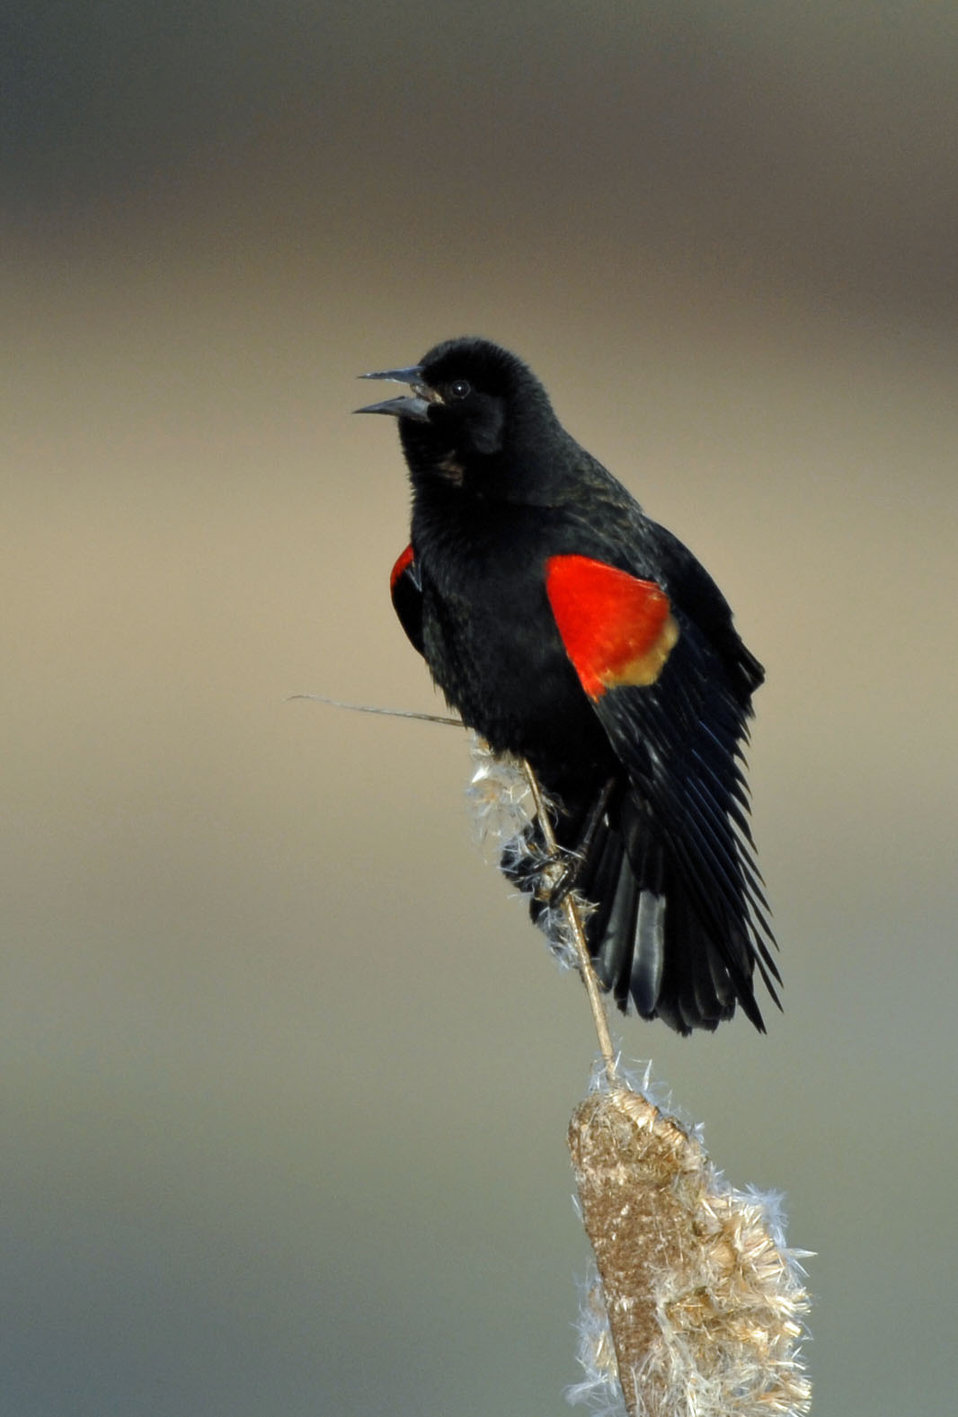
Adult male Red-winged Blackbird

Finely National Wildlife Refuge Blackbird